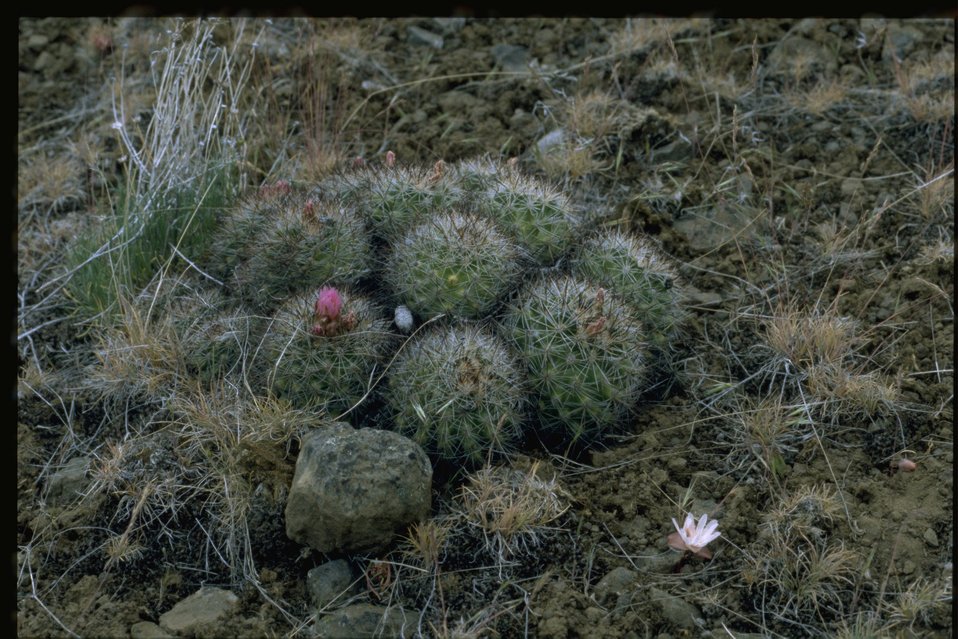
Farshot of Simpson hedgehog cactus (Pediocactus simpsonii var. robustior).